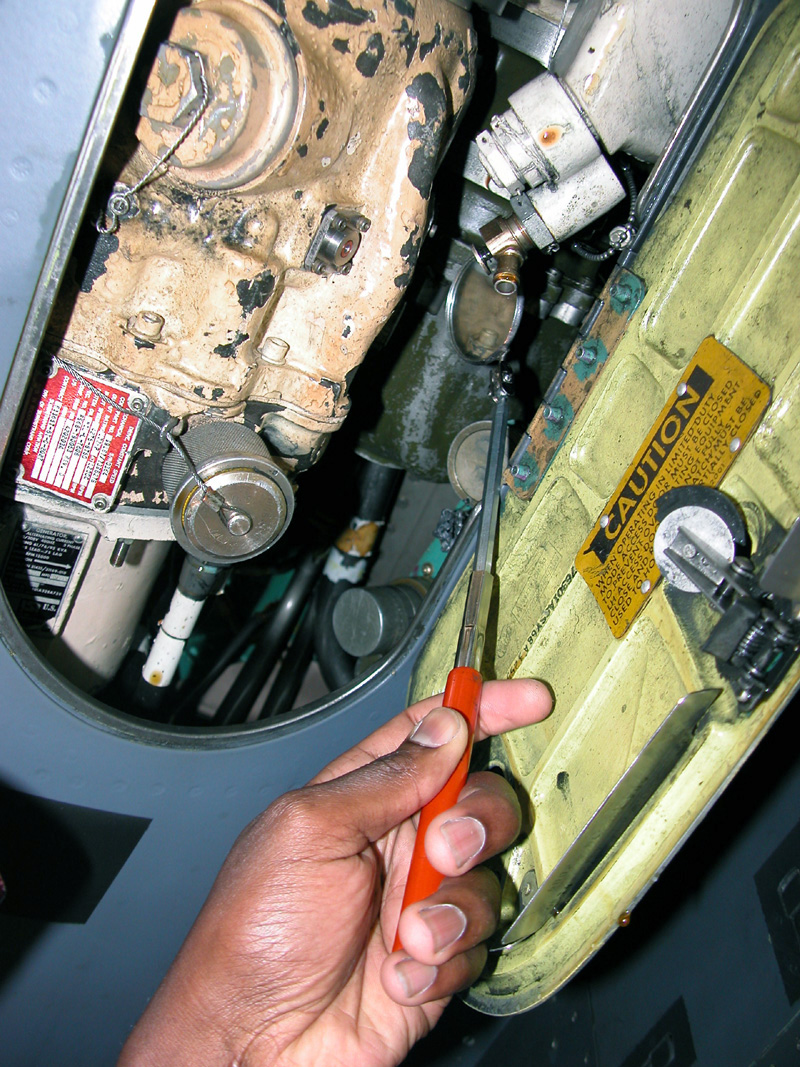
Just a phase

SOUTHWEST ASIA -- An Airman with the 379th Expeditionary Aircraft Maintenance Squadron's F-15E Strike Eagle phase shop inspects an integrated drive generator at a forward-deployed location May 3. The phase shop Airmen have performed 26 inspections over a 66-day period and have maintained a 94-percent quality assurance inspection pass rate.